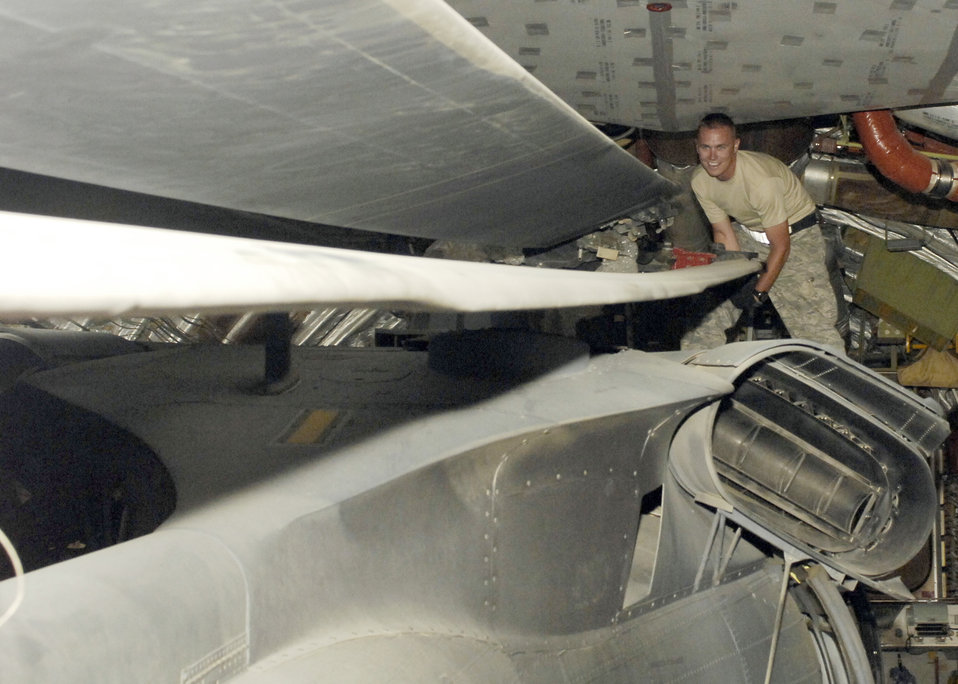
Flying a hawk home

Staff Sgt. Trevor Smith ensures the rotors do not move on the HH-60G Pave Hawk during a final check of the aircraft, Sept. 9, 2009, at Bagram Airfield, Afghanistan. The Pave Hawk must be secure on the C-17 Globemaster III to ensure it doesn't get damaged in flight back to its home station. Sergeant Smith is a helicopter crew chief from the 455th Expeditionary Aircraft Maintenance Squadron, and deployed from Royal Air Force Lakenheath, England.